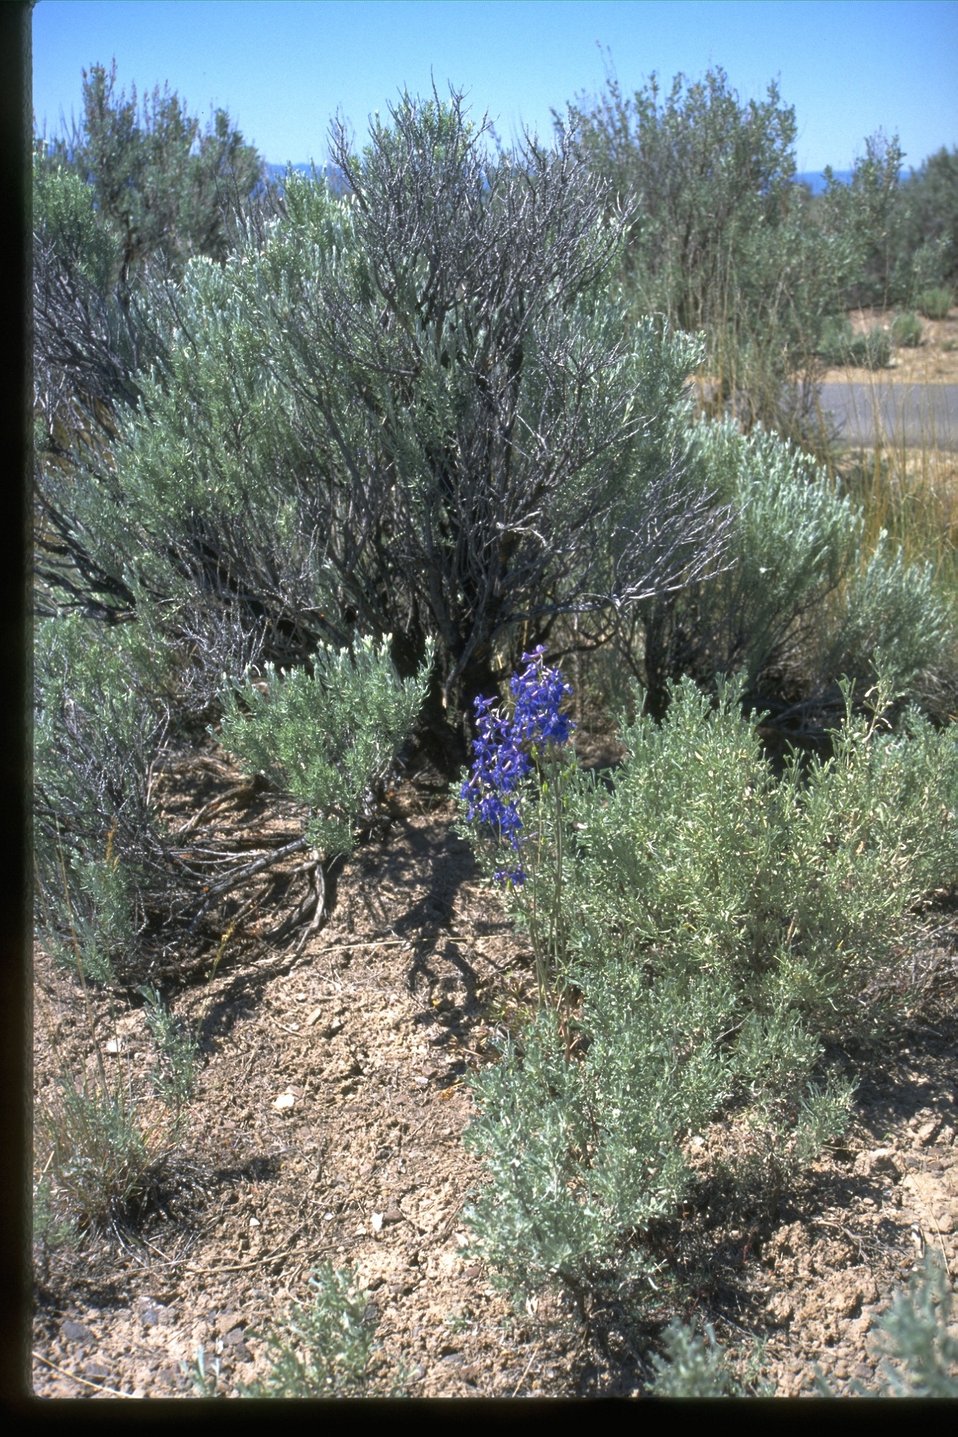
Wildflowers on Flagstaff Hill, near the NHOTIC.